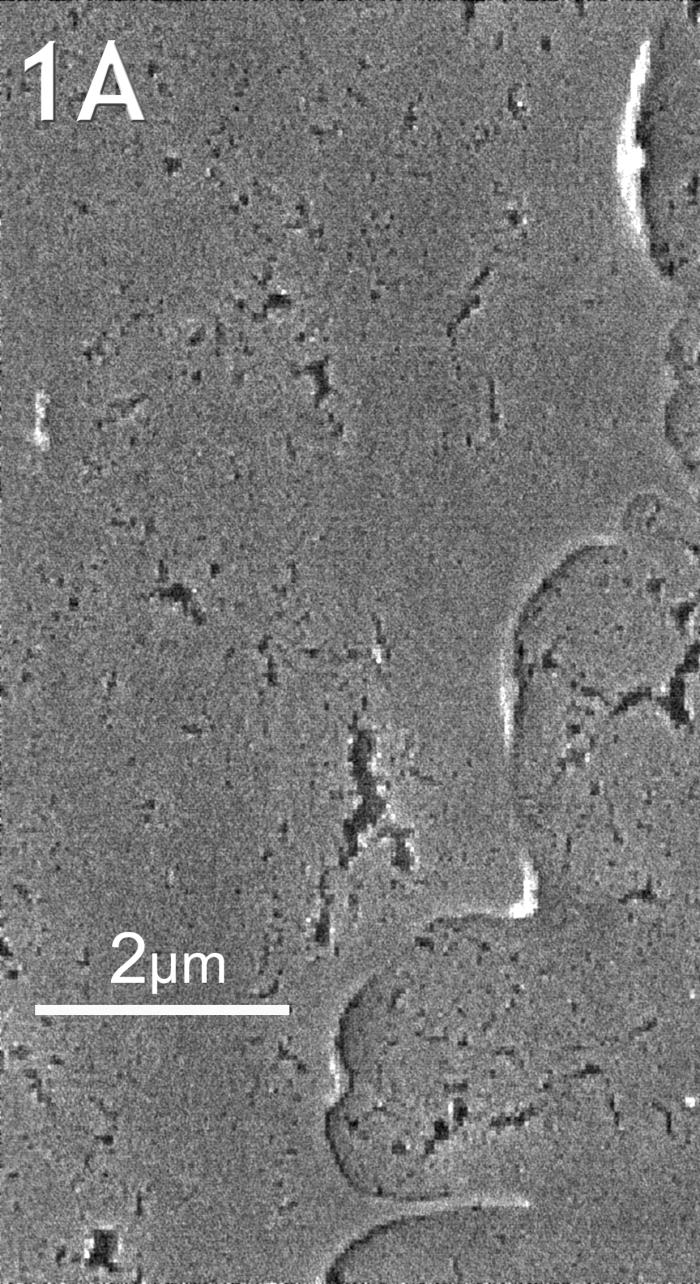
This scanning electron micrograph reveals how uninfected Vero E6 cells looked relatively flat with minimal surface morphology.